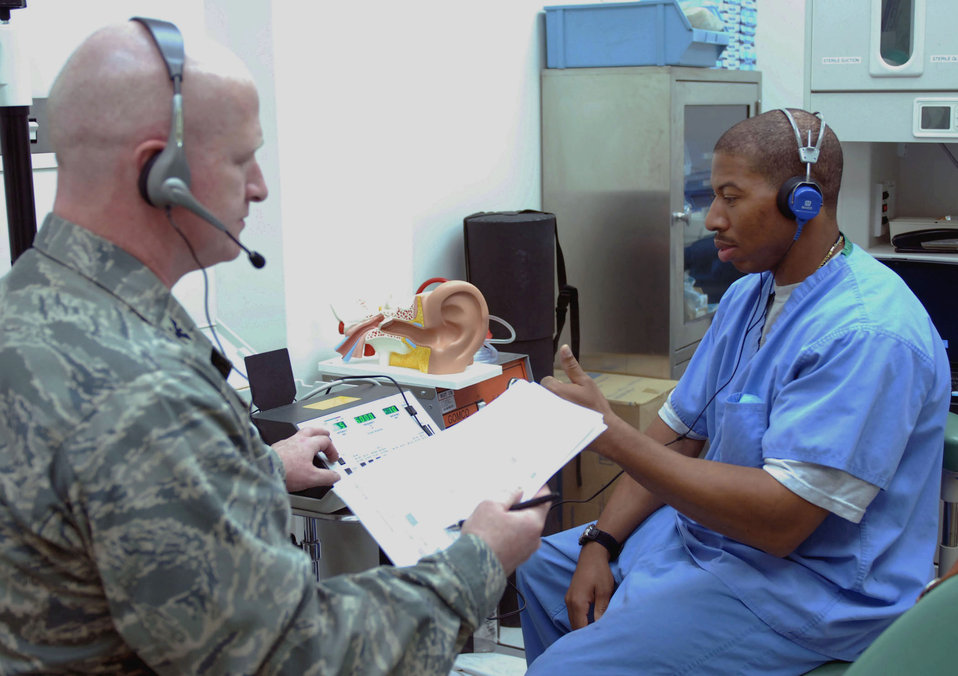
Clinic traffic downrange shows need for hearing protection

Col. (Dr.) Joseph Brennan demonstrates a portable hearing test machine with help from Staff Sgt. Lee Adams, an ear, nose and throat technician. Doctor Brennan is the ear, nose and throat doctor at the Staff Sgt. Heath N. Craig Joint Theater Hospital at Bagram Airfield, Afghanistan.